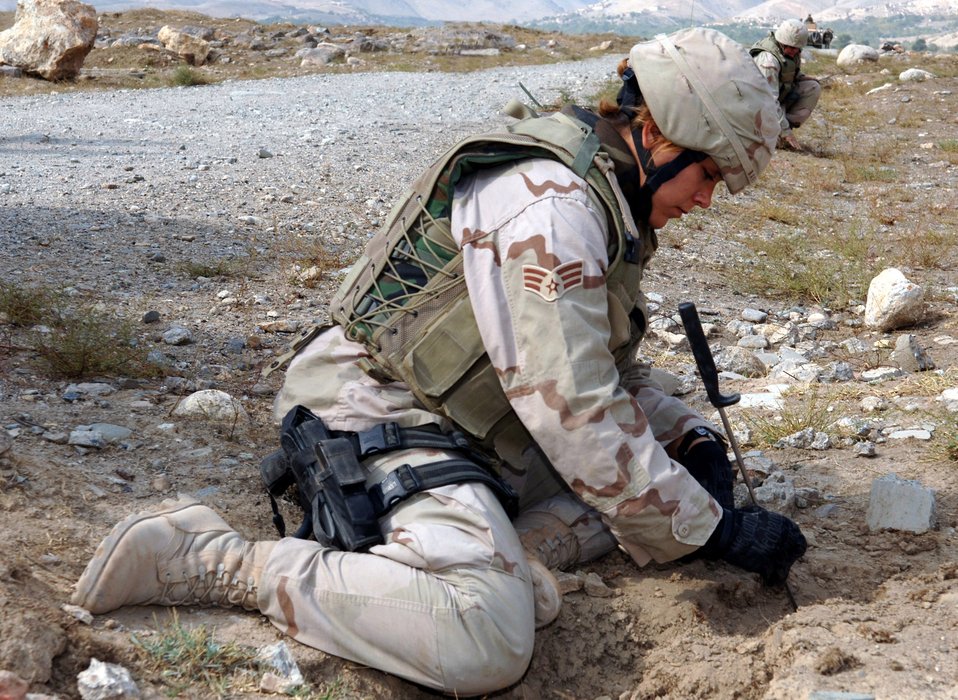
Clearing the way

BAGRAM AIRFIELD, Afghanistan -- Senior Airman Sabrina Baker, an explosive ordnance disposal equipment troop, helps clear a path through a minefield. The Airman, is with the 455th Expeditionary Civil Engineer Squadron Explosive Ordnance Disposal Flight here. The EOD troops spent two months doing clearing the area near an old Soviet munitions supply dump. This allowed Soldiers from the 23rd Ordnance Company at Miesau, Germany, and 5th Maintenance Company at Kaiserslautern, Germany, to load three 5,000-pound rockets onto a wrecker Oct. 15 and take them to a secure site for disposal. Airman Baker deployed from Davis-Monthan Air Force Base, Ariz.